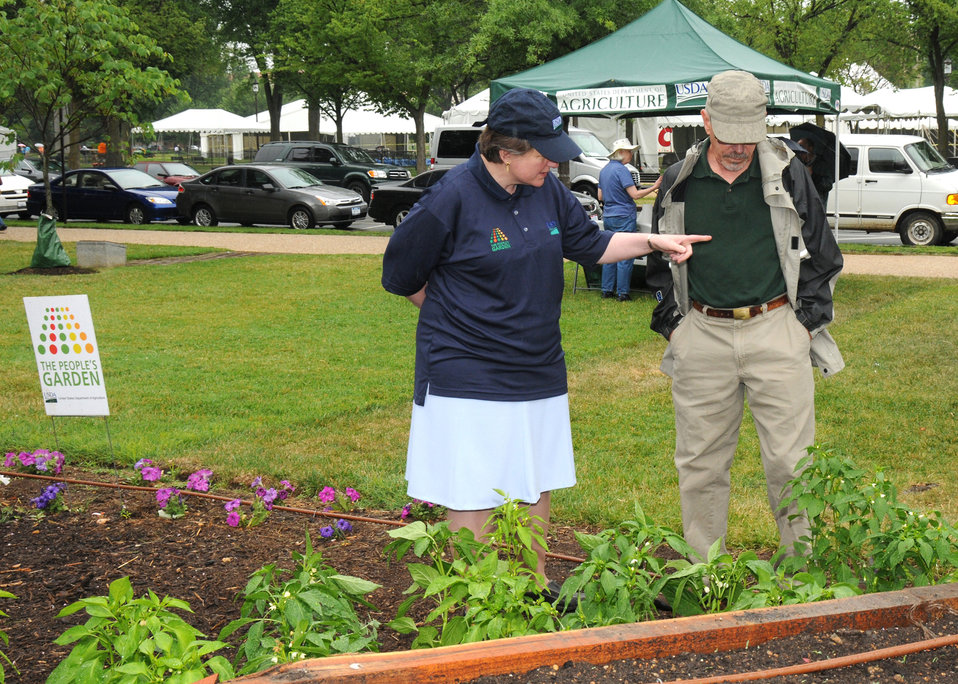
Agriculture Deputy Secretary Kathleen Merrigan and Agricultural Research Service (ARS) lab volunteer Douglas Johnson discuss the Chile pepper seedlings to be planted in the Department of Agriculture People’s Garden located at the US Department of Agriculture in Washington, DC, on Wednesday, June 09, 2010. USDA photo 10di1397-47.